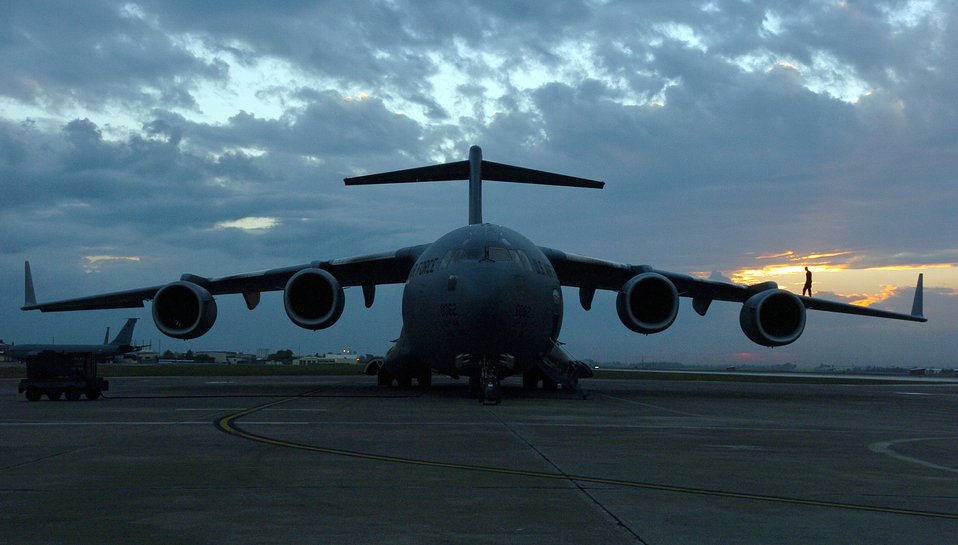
Crew chief

Staff Sgt. Daryl Washington performs a prevention inspection on a C-17 Globemaster III Nov. 15 at Incirlik Air Base, Turkey. Sergeant Washington is a crew chief with the 728th Air Mobility Squadron.